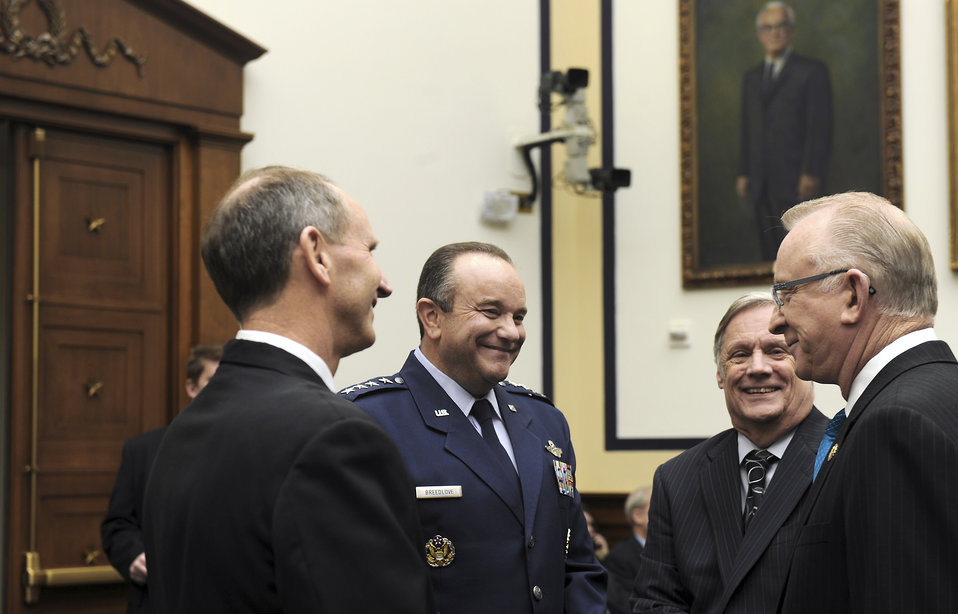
HASC Hearing on Efficiencies in DoD

(From left) Vice Chief of Naval Operations Adm. Jonathan Greenert and Air Force Vice Chief of Staff Gen. Philip Breedlove visit with House Armed Services Committee Chairman Howard P. McKeon (far right) on Capitol Hill Jan. 26, 2011 in Washington. General Breedlove, the vice chiefs from the other services and the deputy secretary of defense discussed Department of Defense efficiencies with committee members during a hearing.